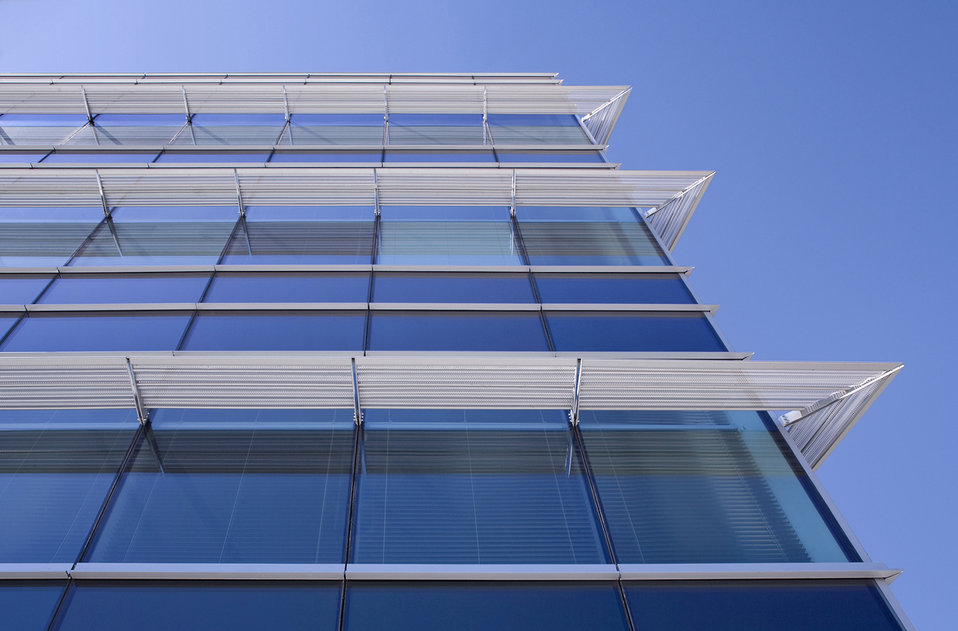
Exterior Light Shelves

Day light and occupancy sensors, high efficiency window glazing, external shading and interior light shelves, and reduced power use for lighting based on more efficient, open workspace floor plans all contribute to energy savings.

To find out more about the Region 8 green building: www.epa.gov/region8/building/

To find out more about the Region 8 green building sustainable design and operations: www.epa.gov/region8/building/design.html